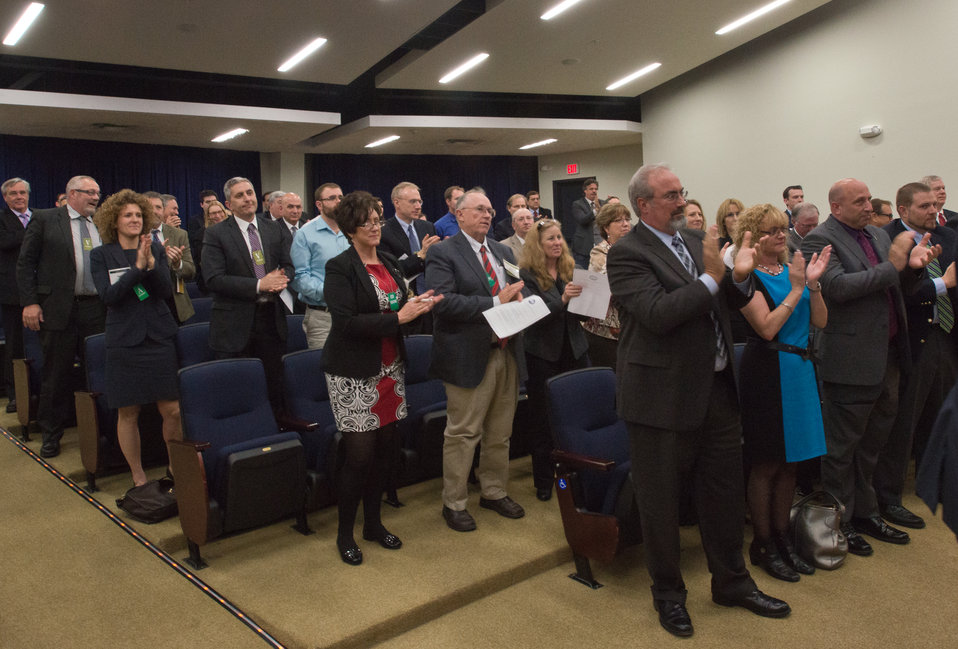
Representatives from the dairy industry applaud Agriculture Secretary Tom Vilsack and Innovation Center for U.S. Dairy Chief Executive Officer (CEO) Tom Gallagher after they sign a Memorandum of Understanding (MOU) at the Innovation Center For U.S. Dairy Sustainability Council Meeting on Wednesday, Apr. 24, 2013, at the White House, Washington, D.C. The objectives of the MOU are to increase the construction of anaerobic digesters and explore innovative ways to use products previously considered waste streams from dairy production, processing and handling.